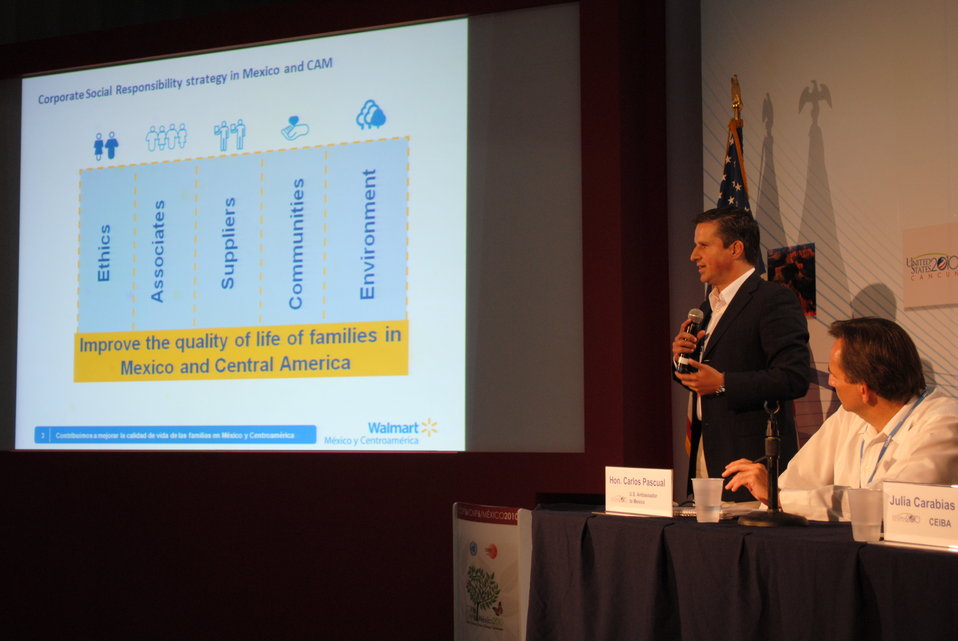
Walmart's Manuel Gomez Pena Addresses the U.S. Center

Manuel Gomez Pena of Walmart addresses the U.S. Center during the U.S. and Mexico Bi-National Cooperation on Climate Change and Development panel at the U.S. Center at COP-16 in Cancun, Mexico, on December 8, 2010.